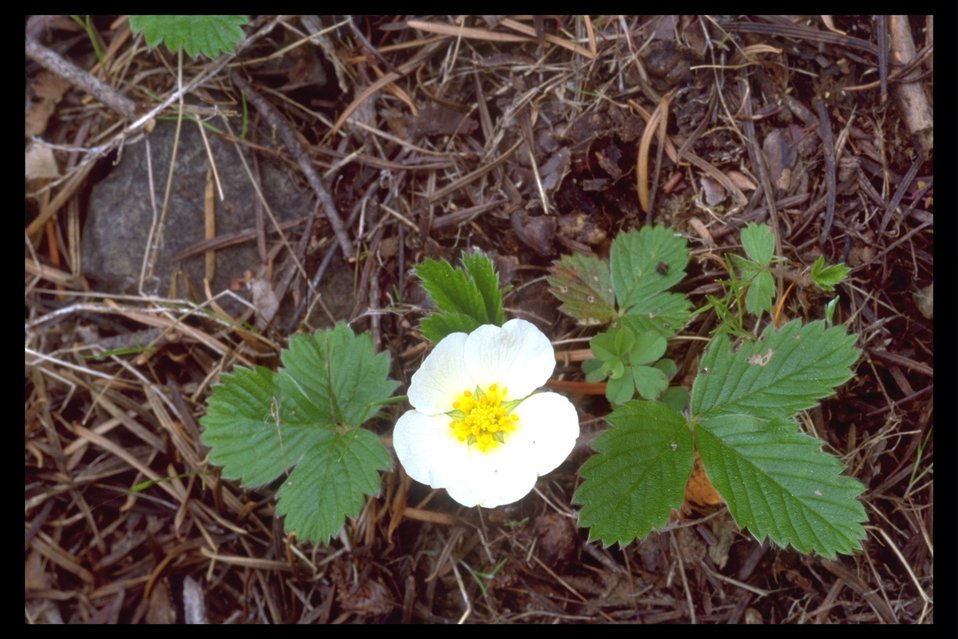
Woods Strawberry (Fragaria vesca) near Lost Creek Lake.